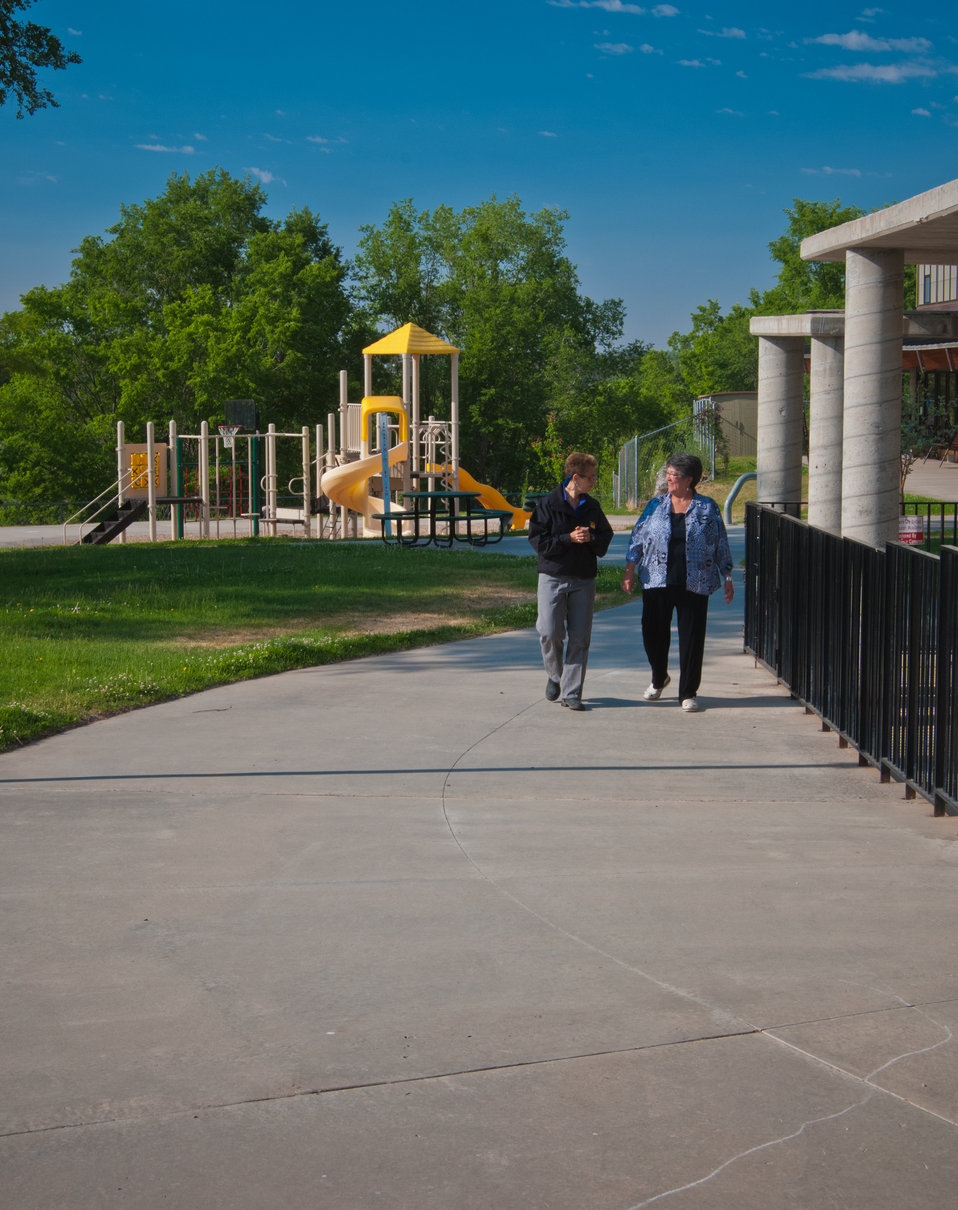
U.S. Department of Agriculture (USDA) Regional StrikeTeam Coordinator Sharon Nance and Olguin Boys and Girls Club of the Southern UTE Indian Tribe Director Carol Baker talk about the benefits of the USDA StrikeForce Initiative in Ignacio, CO on Thursday, Jun. 13, 2013. The USDA StrikeForce Initiative in cooperation with public and private organizations offers many economic grants, loans and conservation contracts through USDA’s Rural Development (RD) and the Natural Resources of Conservation Service (NRCS) for areas of rural America with a high percentage of people living below the poverty level and considered economically distressed.